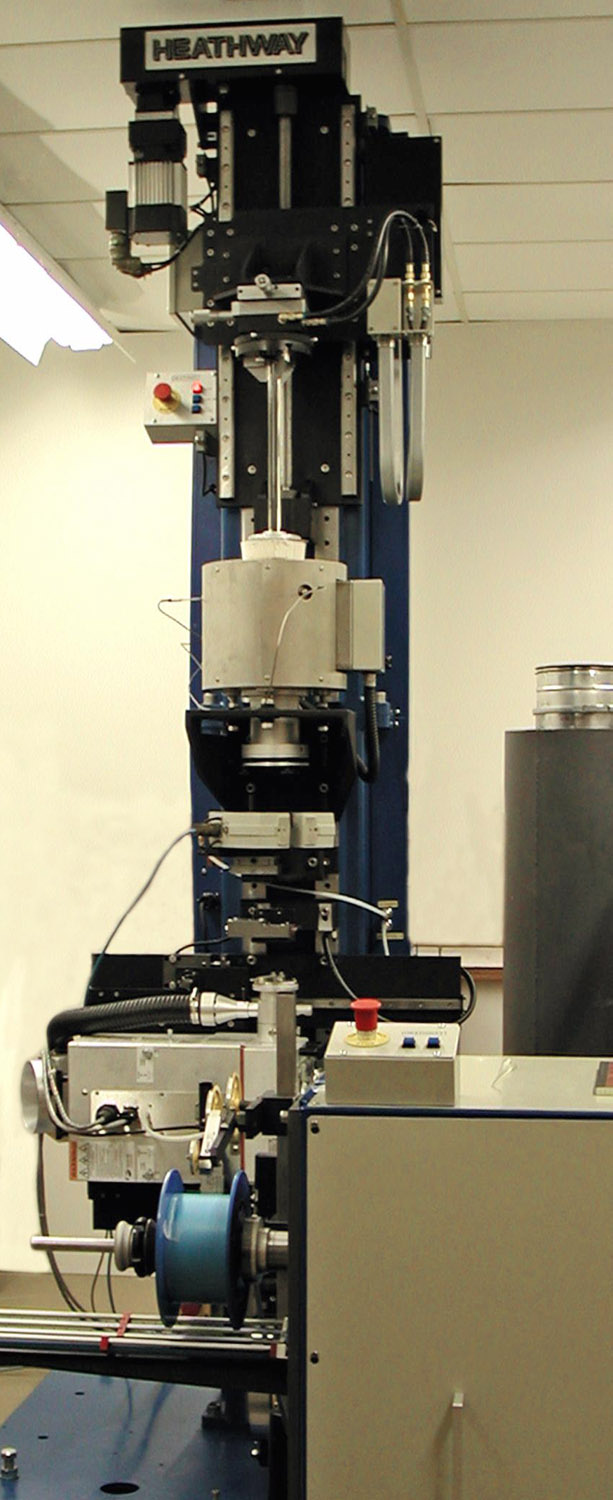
Glass fiber drawing tower

This glass fiber drawing tower can reduce the size of fibers from approximately one-half inch in diameter to smaller than a human hair.